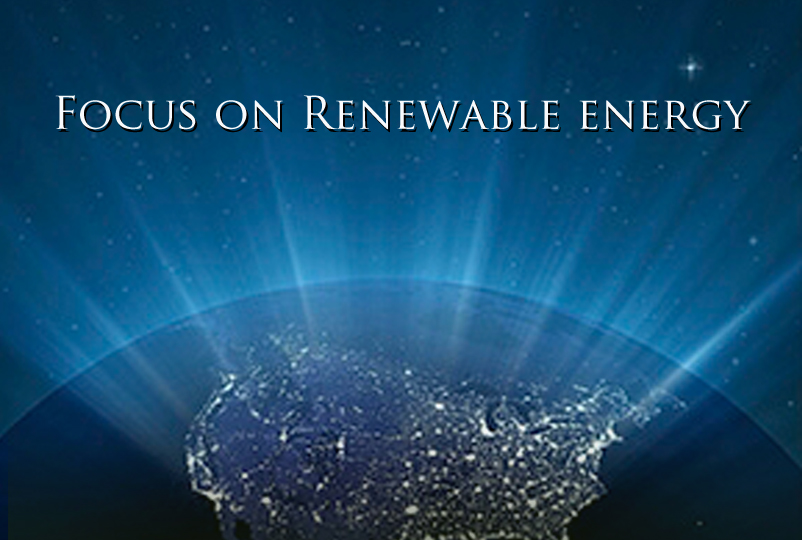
Focus on renewable energy